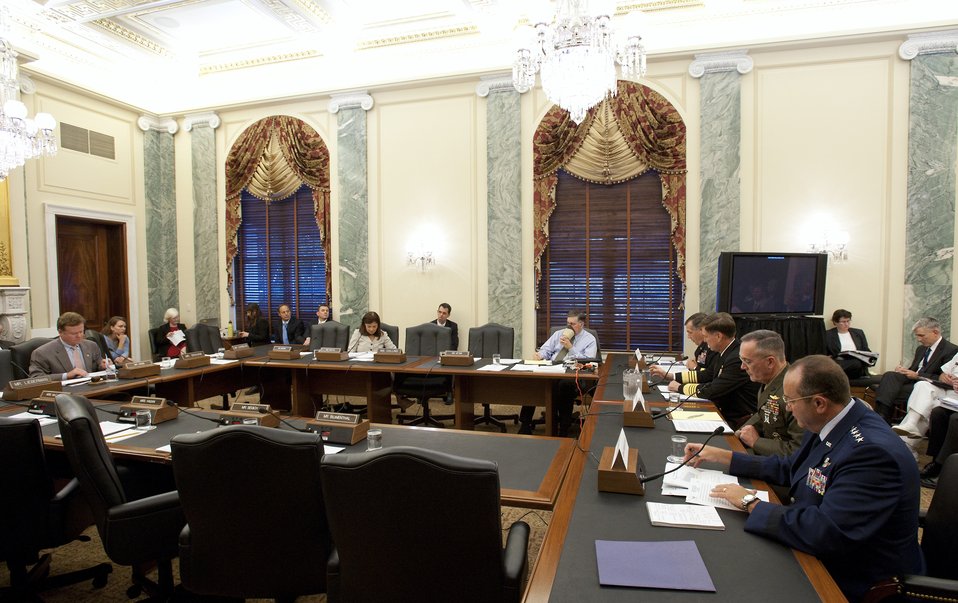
Air Force vice chief testifies on GO, SES numbers

Air Force Vice Chief of Staff Gen. Phil Breedlove (seated far right) joins his Army, Navy and Marine Corps counterparts in discussing general officer and senior executive service authorizations in the military Sept. 14, 2011, in Washington, D.C., during a hearing of the Senate Armed Services Committee's Subcommittee on personnel.